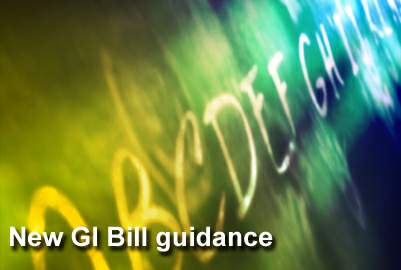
Post-9/11 GI Bill guidance sent to Airmen, commanders

Air Force Personnel Center officials provided updates to the field recently on the Air Force implementation of the Post-9/11 GI Bill.